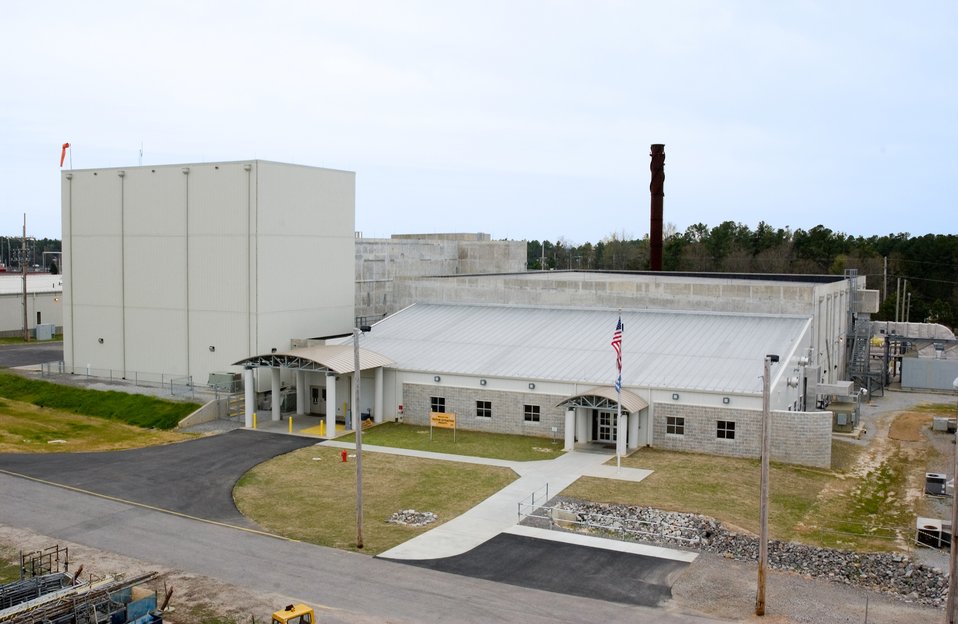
The Tritium Extraction Facility at Savannah River Site, November 2011.